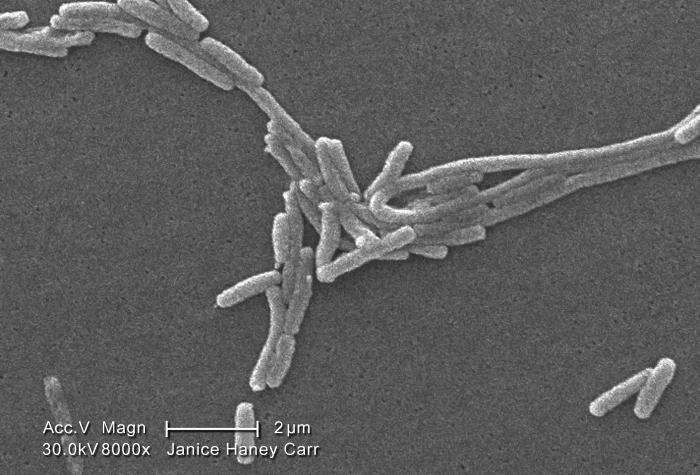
Under a high magnification of 8000X, this scanning electron micrograph (SEM) depicted a grouping of Gram-negative Legionella pneumophila bacteria. Please see PHIL 11092 through 11152 for additional SEMs of these organisms, specifically PHIL 11097 for a colorized version of this image.